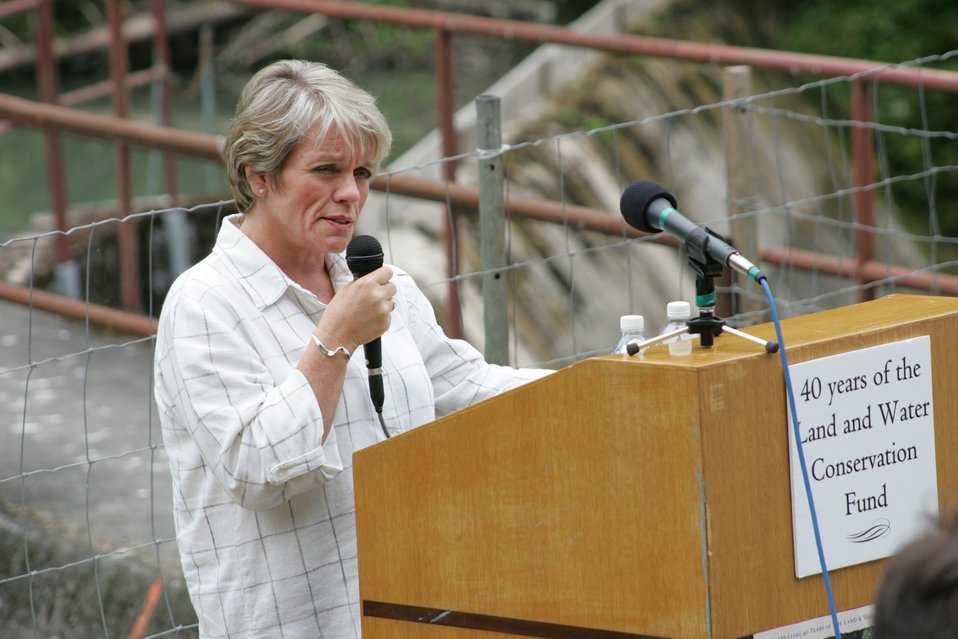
Kathleen Clarke, BLM Director, presents the Four C's Award at the Little Sandy Dam to PGE and the Western River Conservancy.